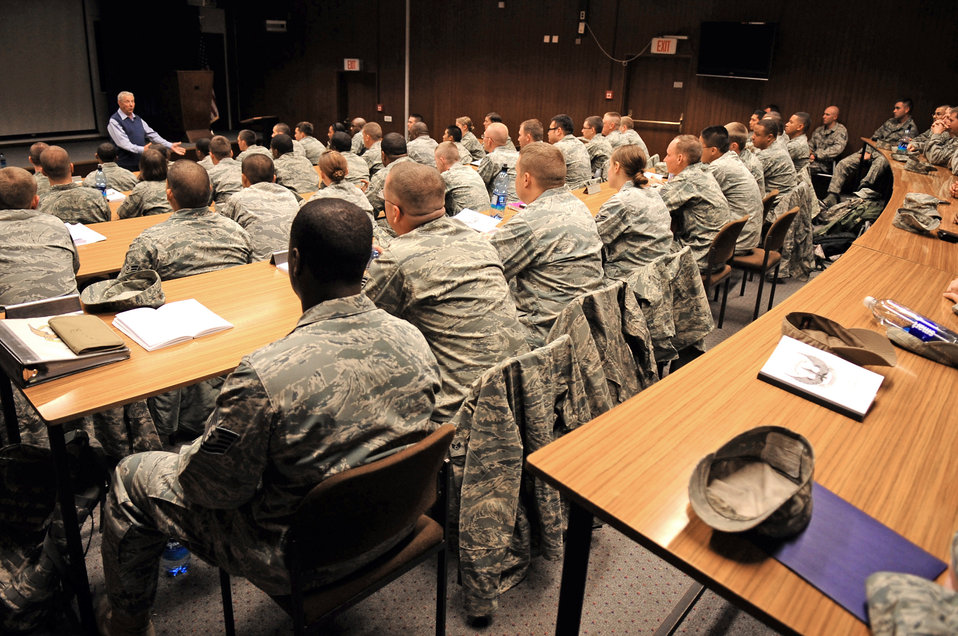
Former CMSAF offers Airmen words of wisdom

Retired Chief Master Sgt. Robert D. Gaylor visits Airmen Sept 7, 2010, at the 435th Security Forces Regional Training Center in Sembach Air Base, Germany. Chief Gaylor took the opportunity to speak to the students as well as receive demonstrations on how security forces Airmen are training for deployment operations. Chief Gaylor is the fifth chief master sergeant of the Air Force.